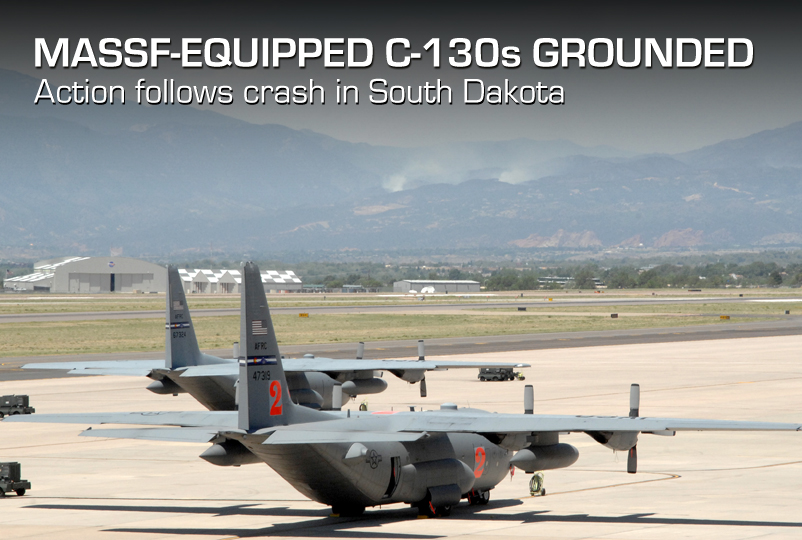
MASSF-EQUIPPED C-130S GROUNDED